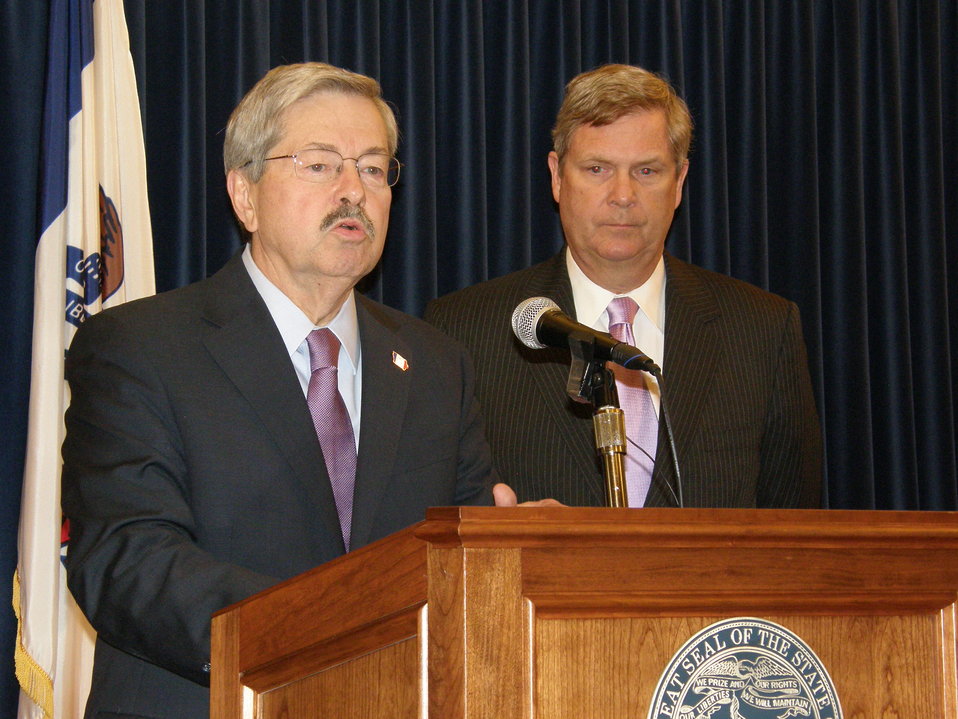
Agriculture Secretary Tom Vilsack (right) and Iowa Governor Terry Branstad held a joint press conference to clarify facts surrounding Beef Products Inc.’s lean finely textured beef. The press conference was held in the Governor’s Large Conference Room, State Capitol, Des Moines, IA.